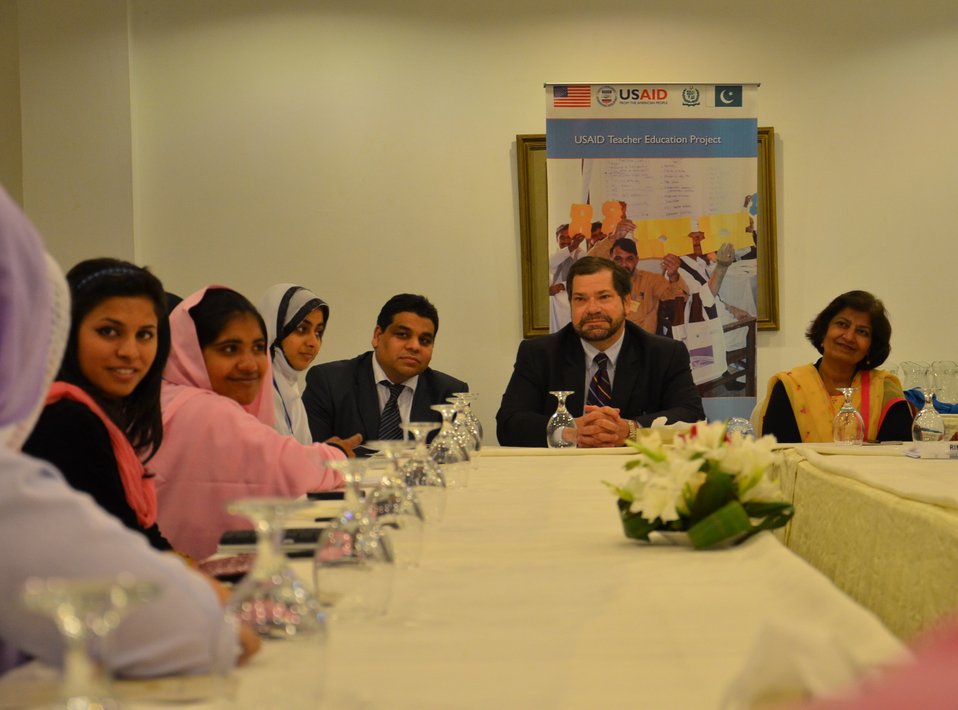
Mr. Bakken during a roundtable discussion with ADE and B.Ed. (Hons.) students